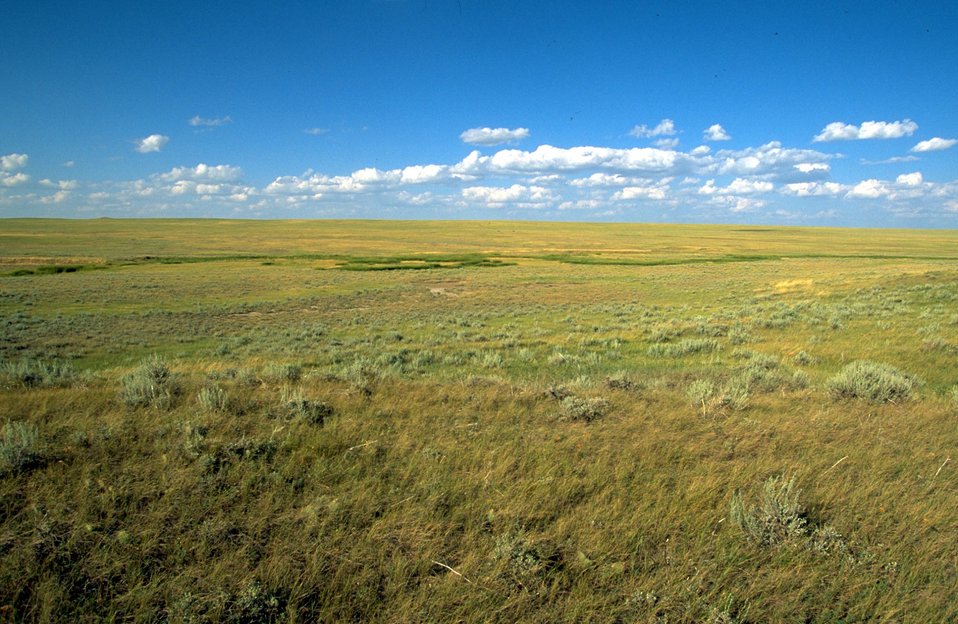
Prairie Cordgrass riparian Battle Creek